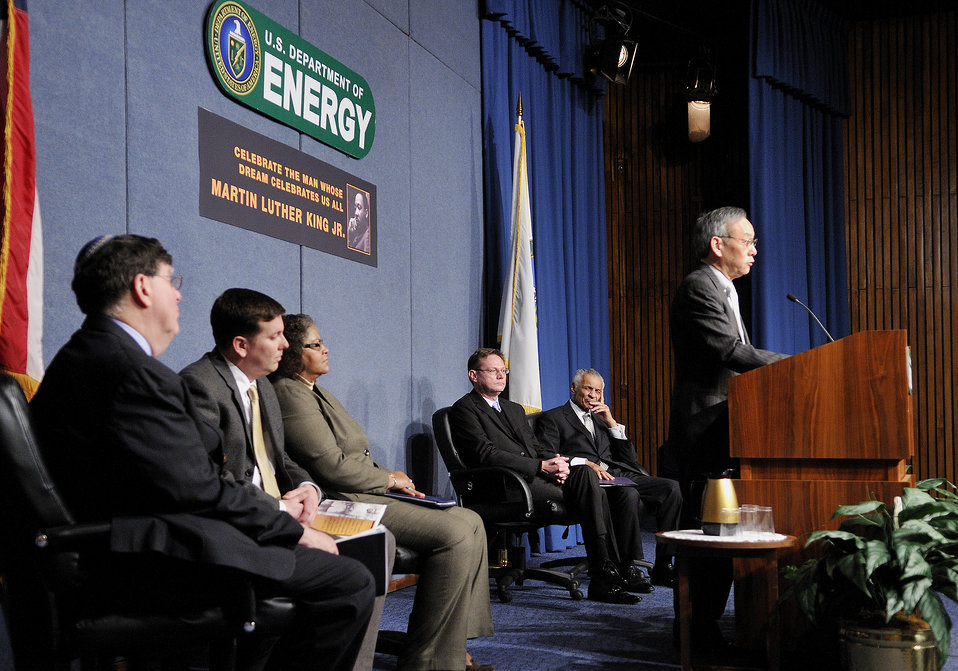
Secretary Chu speaking at the Martin Luther King Jr. Day Celebration at DOE headquarters.